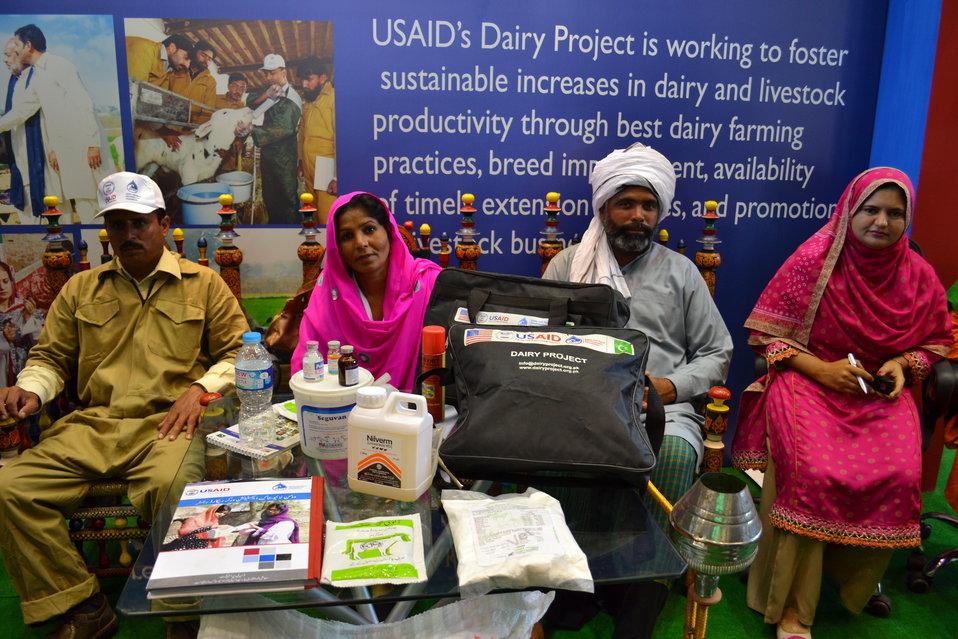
Dairy Project at Dawn Expo 2014